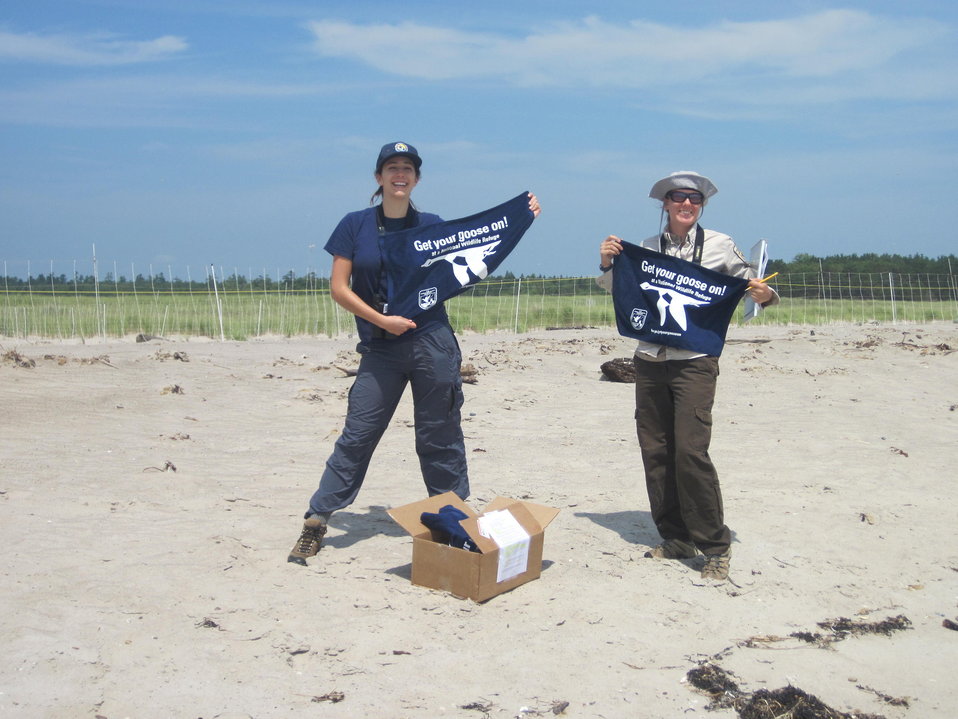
Get Your Goose On!

Finishing up the least tern survey.